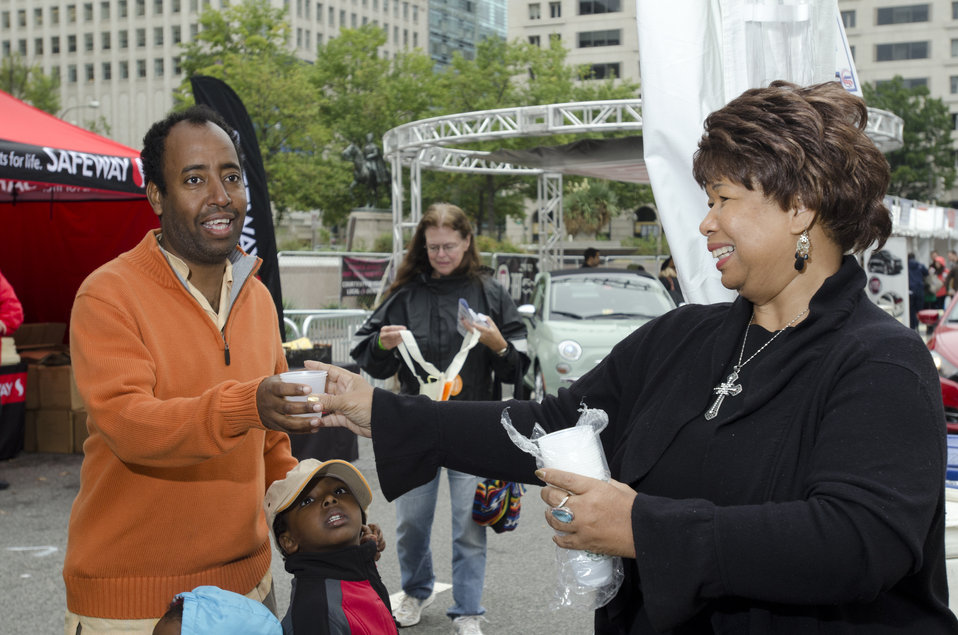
Shirley Harrington-Watson of the USDA Office of Communications hands out sample cups at the Taste of D.C., event that highlights more than 70 eateries, 30 specialty beer providers, the United Service Organization (USO) Metropolitan Washington, and live bands. It is anticipated that more than 500,000 people will attend over the course of the three-day event, which extends from the White House to the Capitol, along Pennsylvania Ave. in Washington D.C. on Sunday, October 7, 2012.